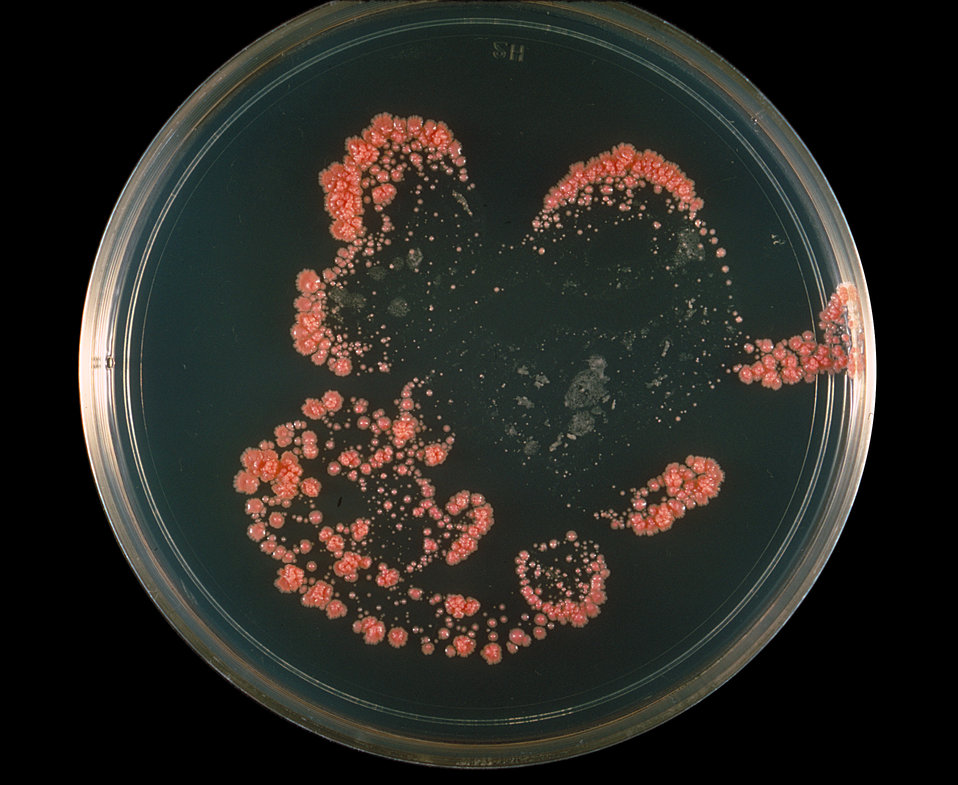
This is a plate culture of the bacteria Nocardia asteroides grown on 7H10 agar medium at 37� C.